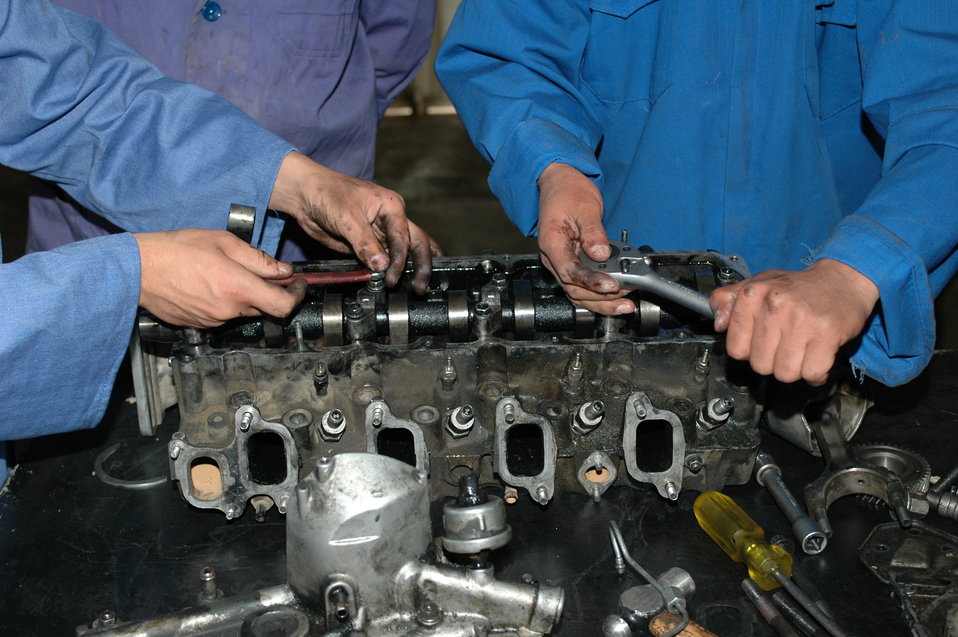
Dr Shah Visits Votech in Kabul